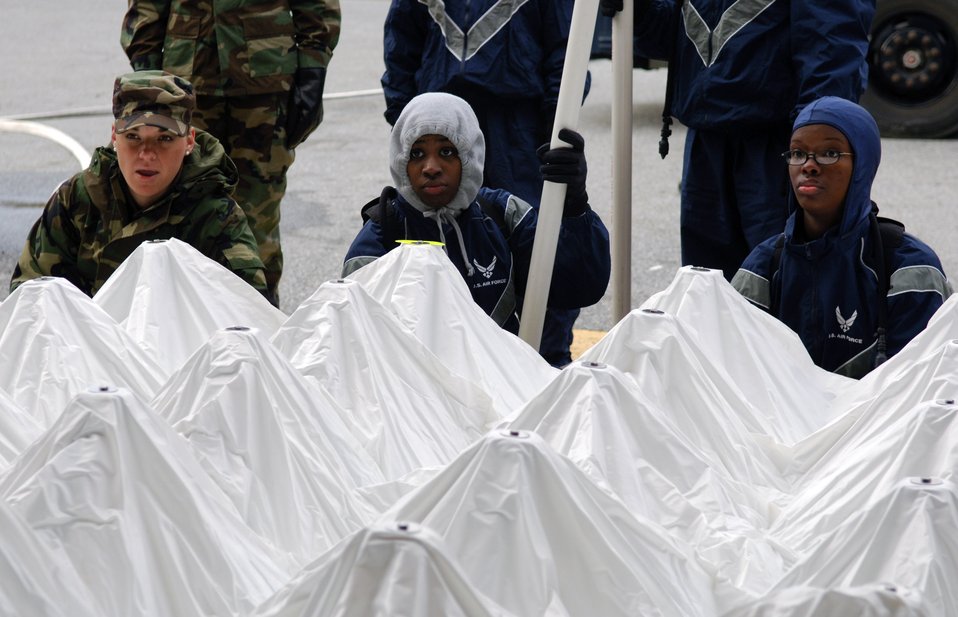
Ready, set, get the tent up!

Airmen from the 79th Medical Group wait to set up a decontamination shelter for a training course March 20 at Malcolm Grow Medical Center on Andrews Air Force Base, Md. The course requires patients to be decontaminated outside of the military treatment facility within an allotted time.